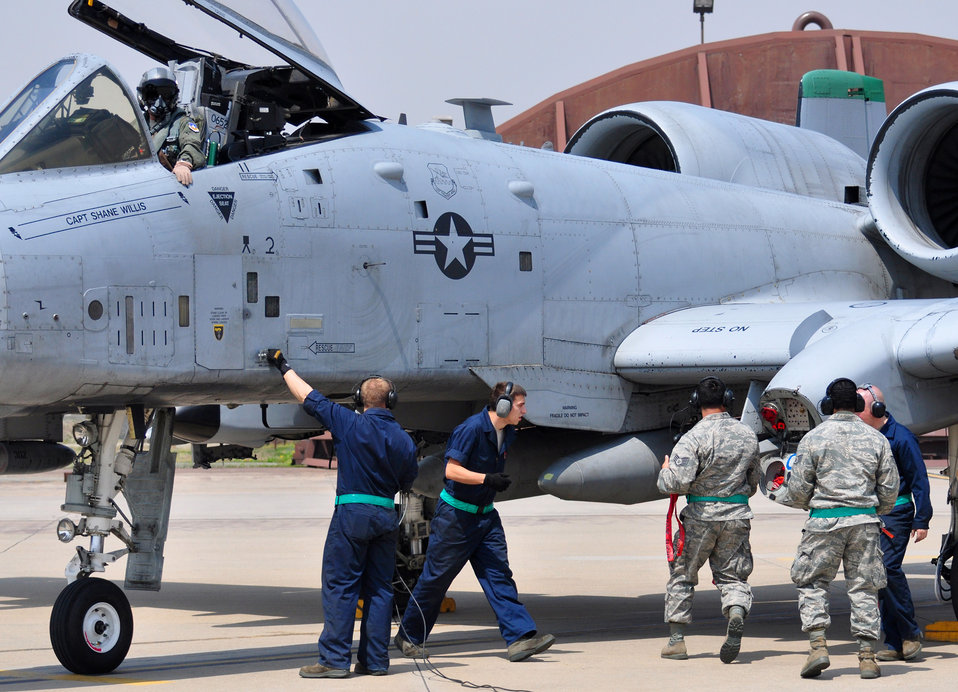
A-10s return

Maintainers prepare to conduct postflight operations on an A-10 Thunderbolt II April 21, 2011, at Osan Air Base, South Korea.